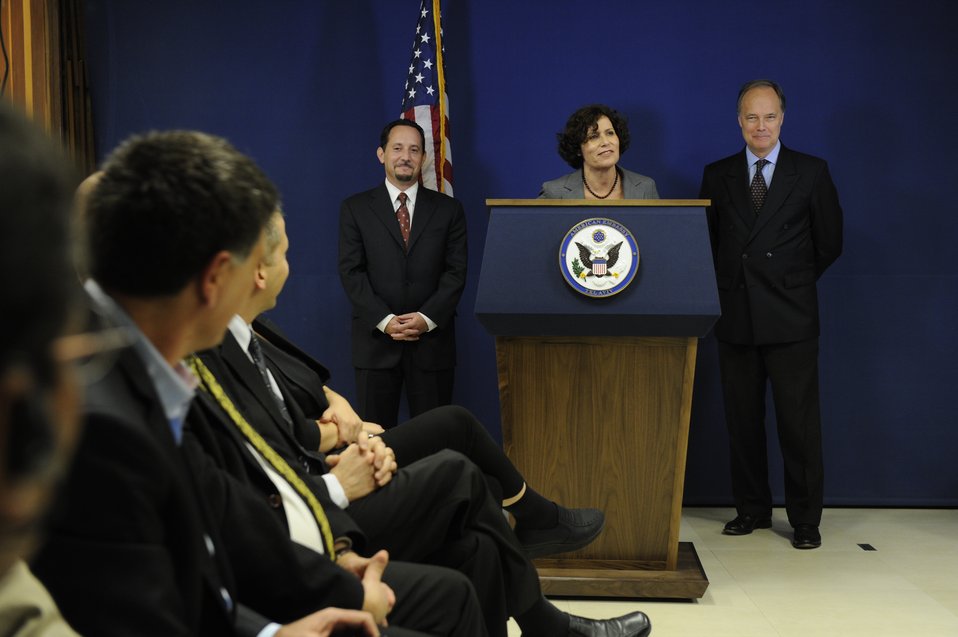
Ambassador Cunningham, Consul General Rubinstein, and CISCO Senior Manager Abzuk Celebrate the ACE Award in Jerusalem

U.S. Ambassador to Israel James Cunningham, U.S. Consul General to Israel Daniel Rubinstein, and Cisco Senior Manager Zika Abzuk, linked via digital video conference with the Secretary of State's Award for Corporate Excellent (ACE) event in Washington, D.C., celebrate the Award at a Jerusalem event in Israel, December 17, 2010.